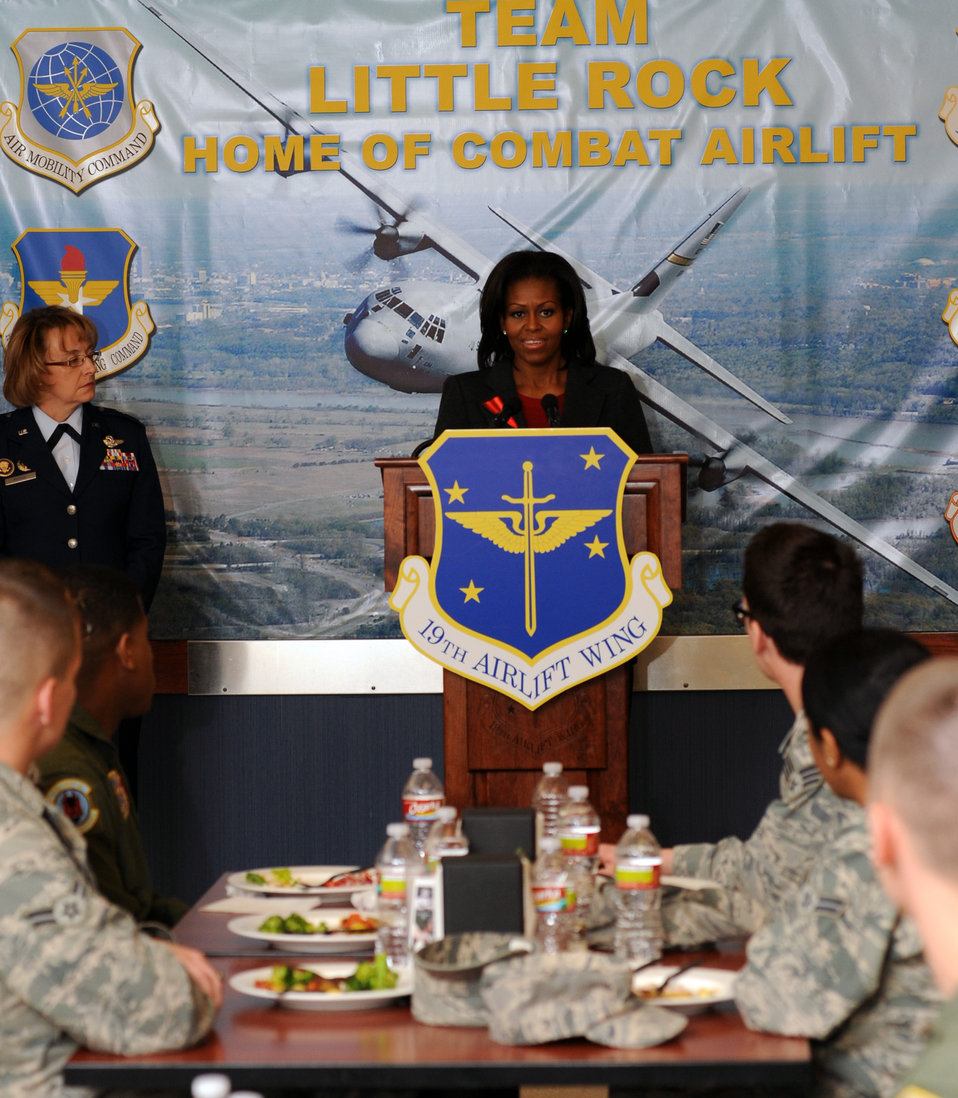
First lady visits Little Rock

Michelle Obama speaks about the Food Transformation Initiative to Airmen at Little Rock Air Force Base, Ark., Feb. 9, 2012. The FTI, which was implemented at the base almost 16 months ago, provides a wider variety of nutritional foods to service members and their families.